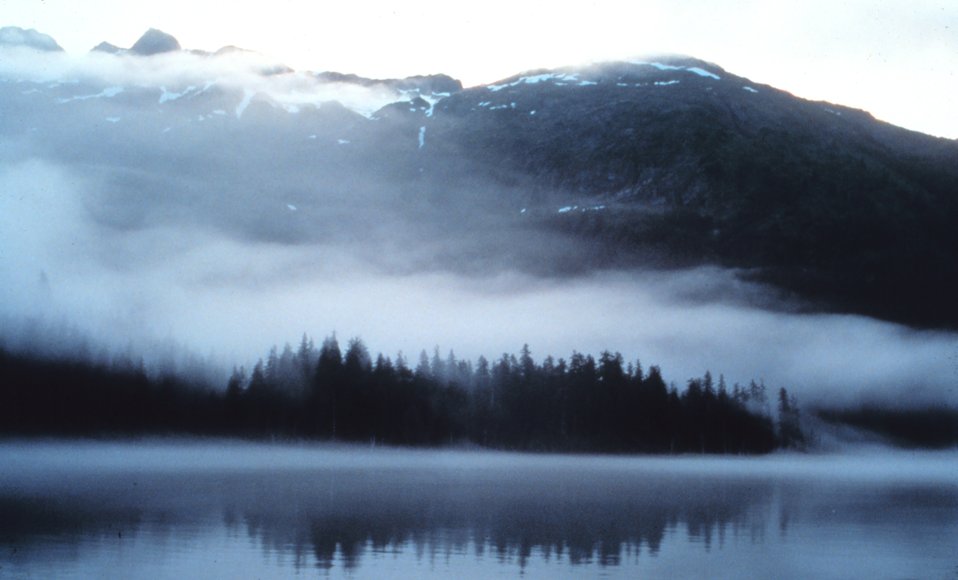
Fog and mist reminiscent of an impressionist painting overlying waters, trees, mountain valleys of Prince William Sound